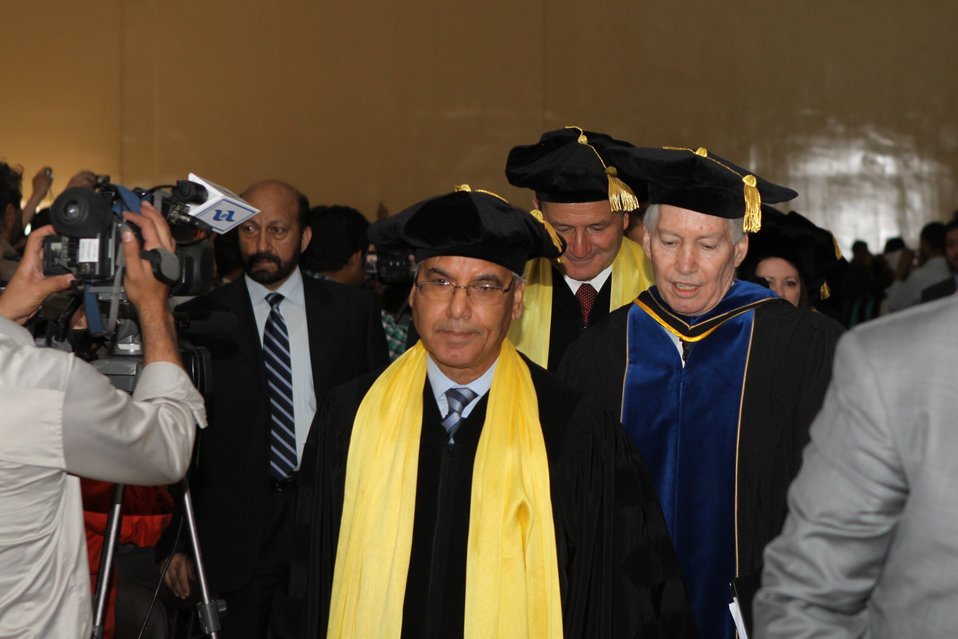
100526 AUAF Graduation 104